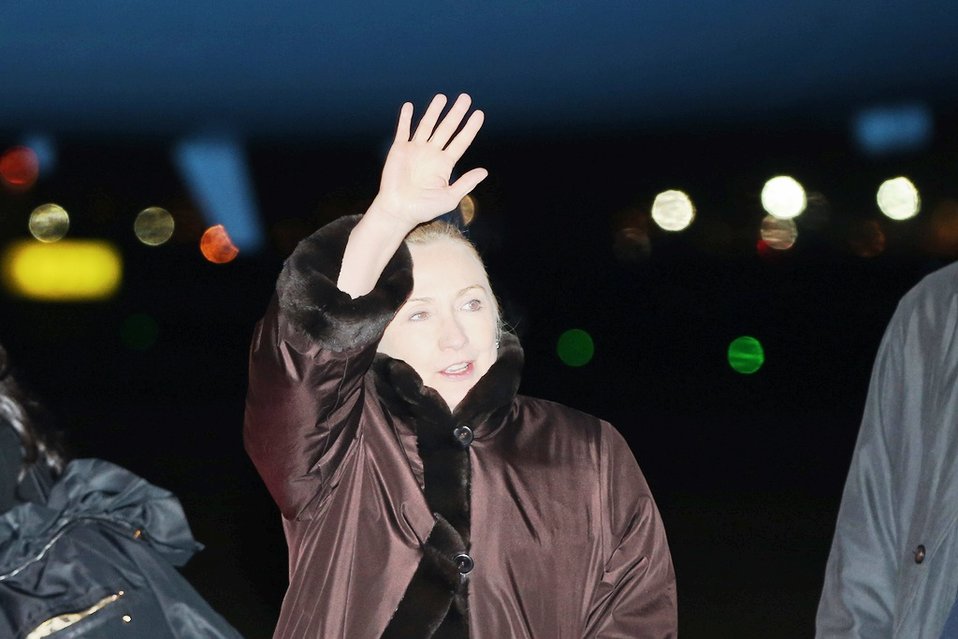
Secretary Clinton Arrives in Dublin

U.S. Secretary of State Hillary Rodham Clinton arrives in Dublin, Ireland, December 5, 2012.